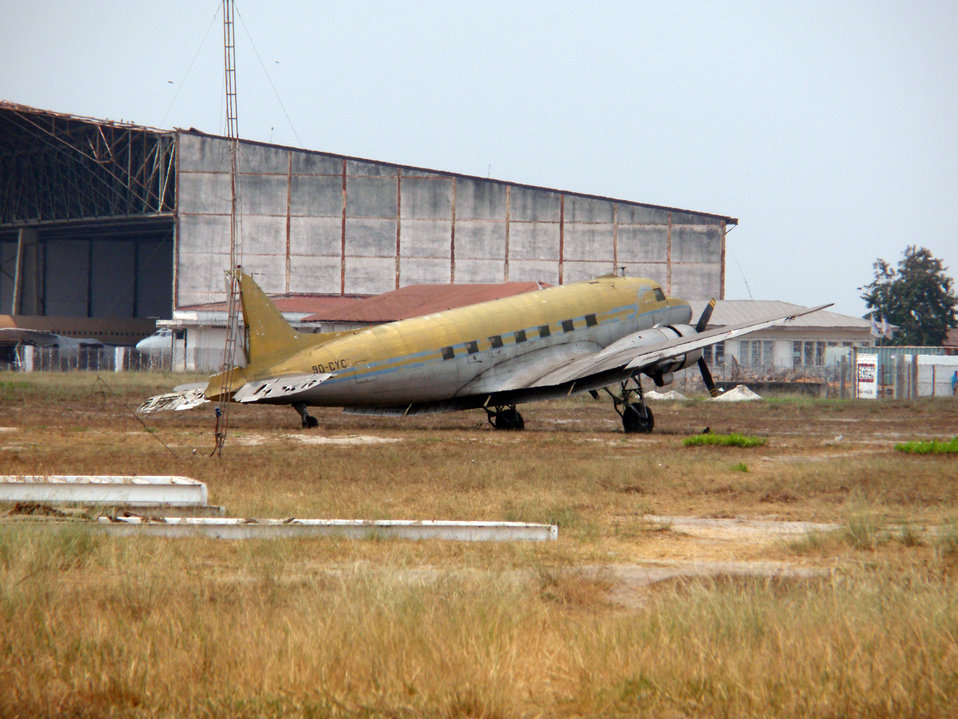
Behind the Scenes: Arrival in Kinshasa

An old plane rests on the air field at the Kinshasa airport in Kinshasa, Democratic Repbulic of Congo August 10, 2009.